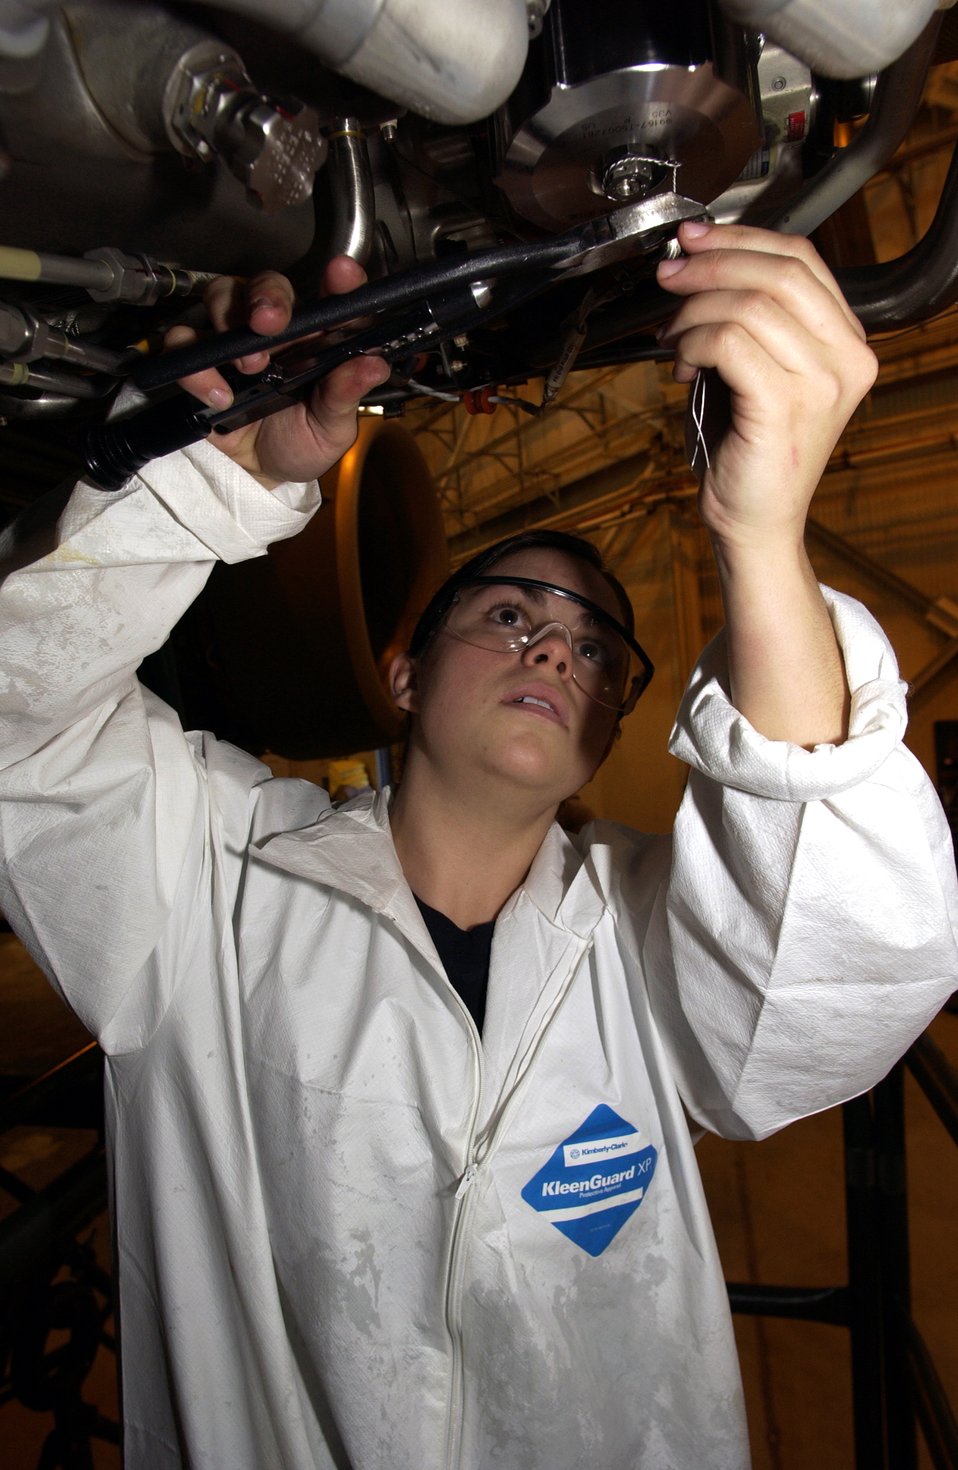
New oil for Globemaster

MCGUIRE AIR FORCE BASE, N.J. -- Airman First Class Kassandra Williams, replaces the oil filter on the No. 2 engine of a C -17 Globemaster III here March 7. The oil change was part of a home station check in which the aircraft is brought in every 120 days for a complete systems inspection. Airman Williams is an aerospace journeyman with the 305th Maintenance Squadron.